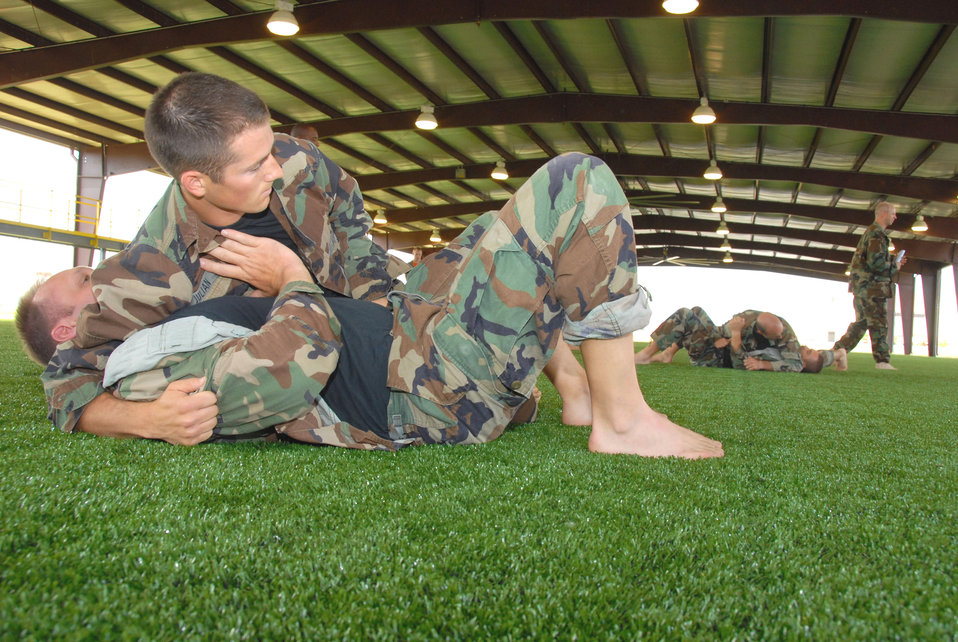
New facilty gives junior officers space to learn self-defense

Air Force Air and Space Basic Course faculty and students train on combative skills at the new Expeditionary Training Complex May 1 at Maxwell Air Force Base, Ala.